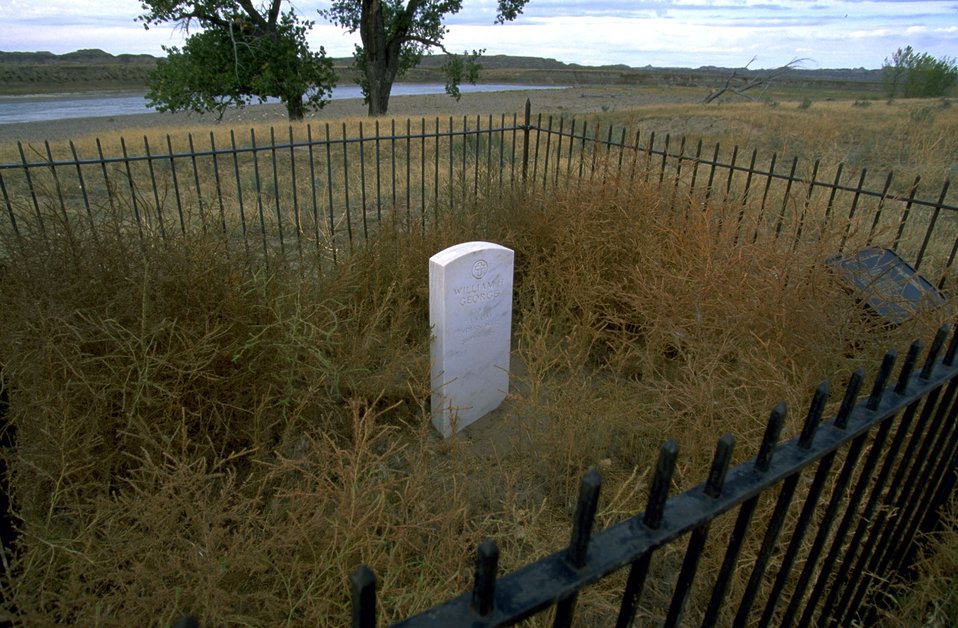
Headstone of William George of Custer's 7th Cavalry, Powder River Depot